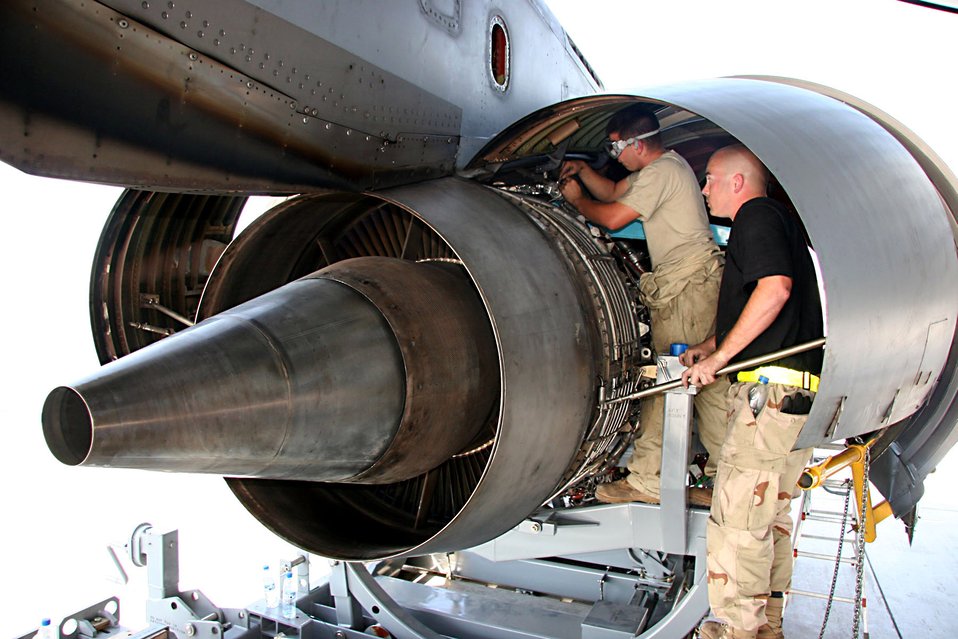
Desert KC-10 Engine Change

Staff Sgt. Joseph Dodson stands by to assist as Airman 1st Class Louis Martens finishes installing safety wires on the engine mounts of a replacement engine on a KC-10 Extender Nov. 23. Sergeant Dodson and Airman Martens are with the 380th Expeditionary Aircraft Maintenance Squadron at an air base in Southwest Asia.